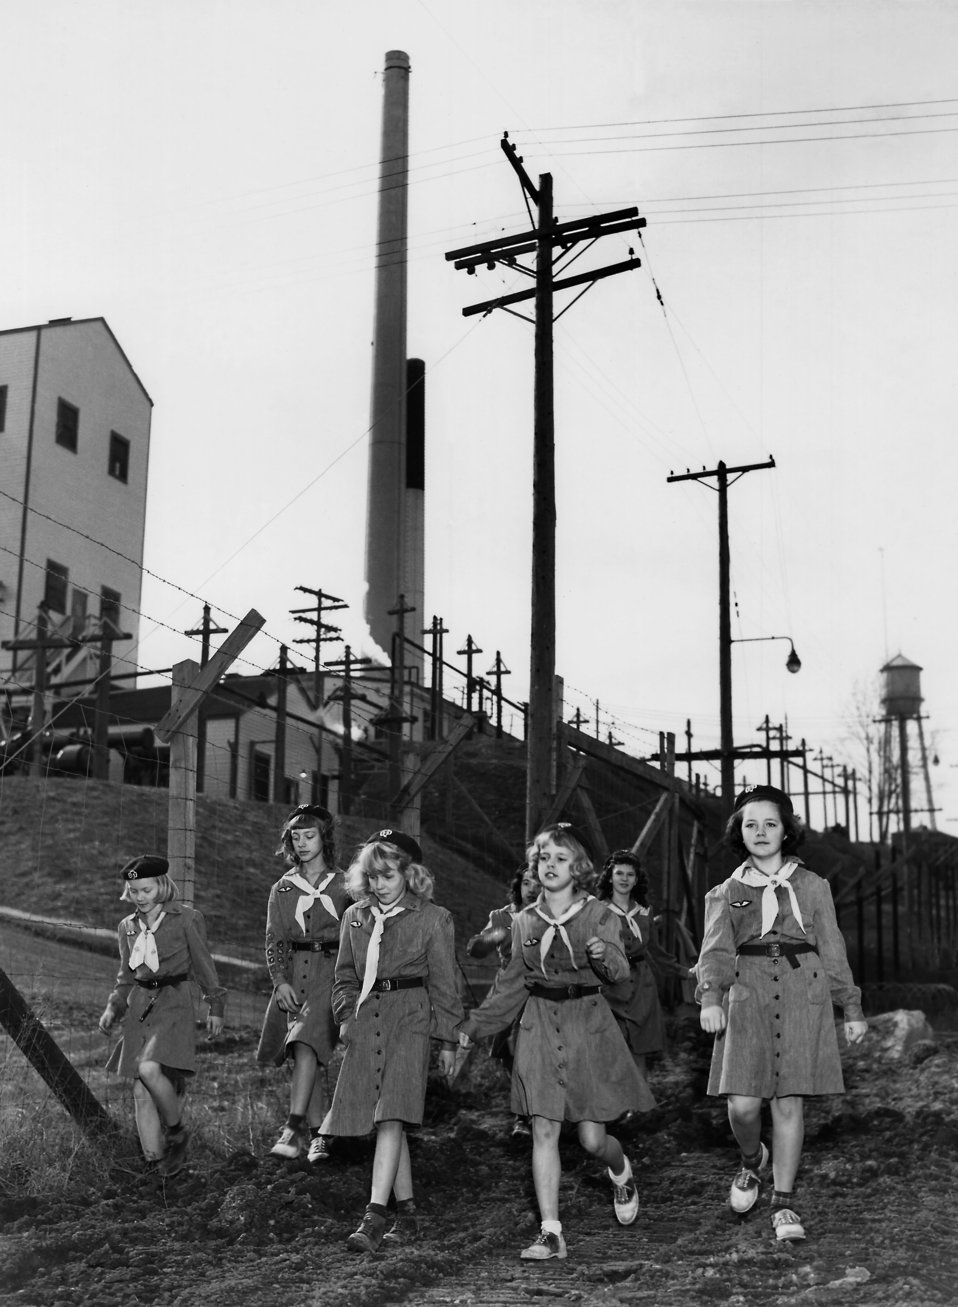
Girl Scouts Visiting X-10 ORNL 1951 Oak Ridge

6994-1 DOE photo Ed Westcott 6-9-1951 Oak Ridge Tennessee